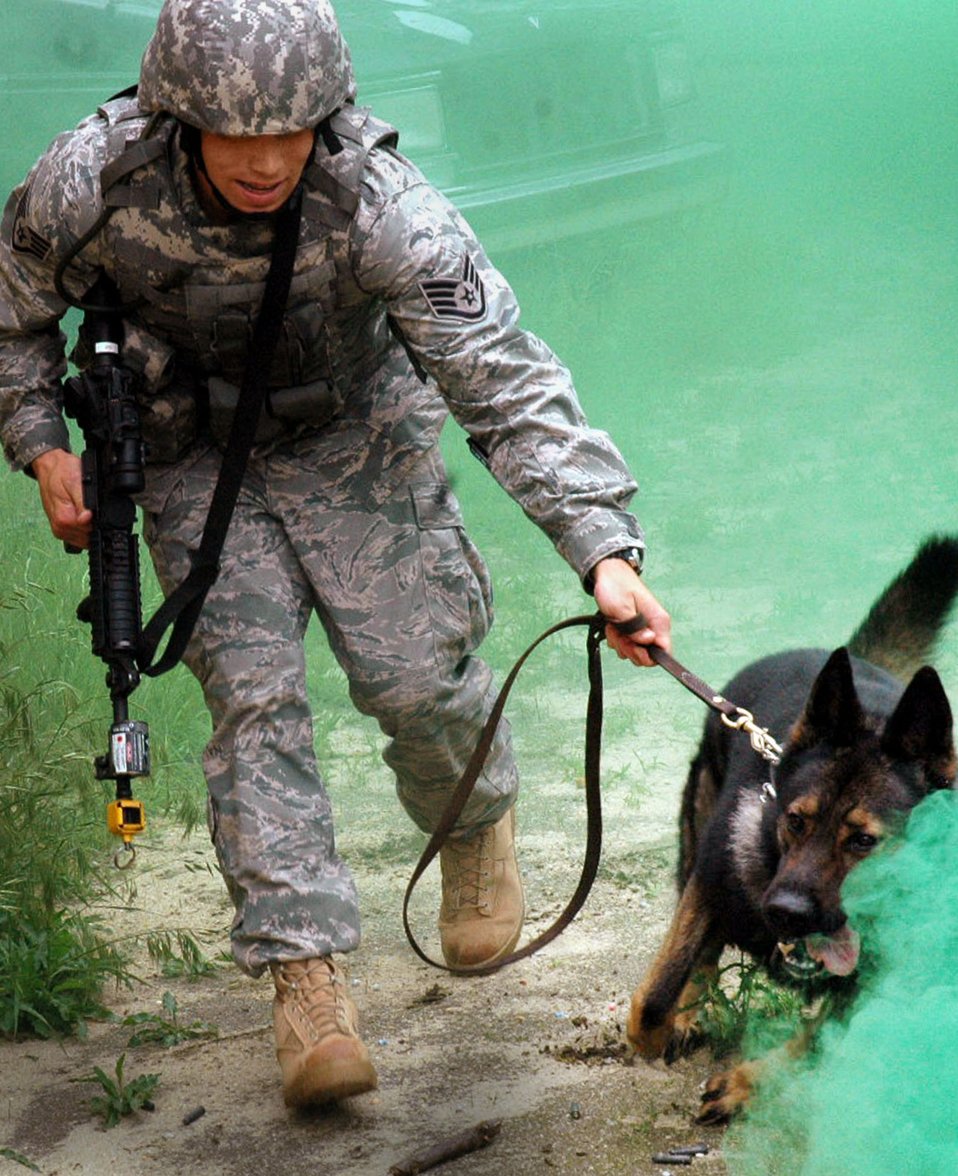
A nose for danger

Staff Sgt. Clifford Hartley and his military working dog, Cir, maneuver through urban terrain training June 5 at Naval Air Engineering Station Lakehurst, N.J. The course prepares security forces before deployment. Both are from the 437th Security Forces Squadron, Charleston Air Force Base, S.C.